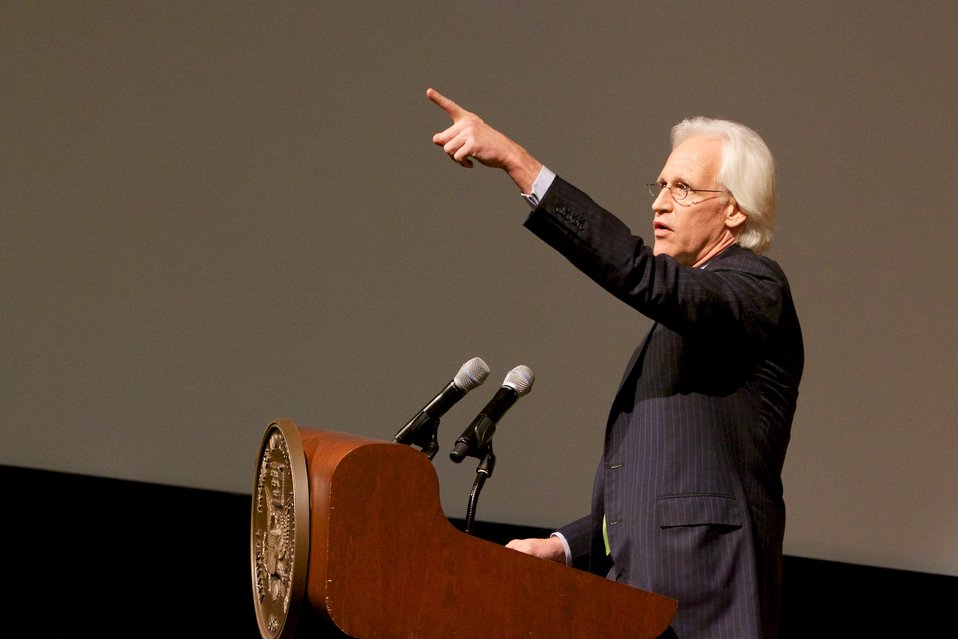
Monuments Men Public Screening; Robert M. Edsel, author, answers questions about the film The Monuments Men